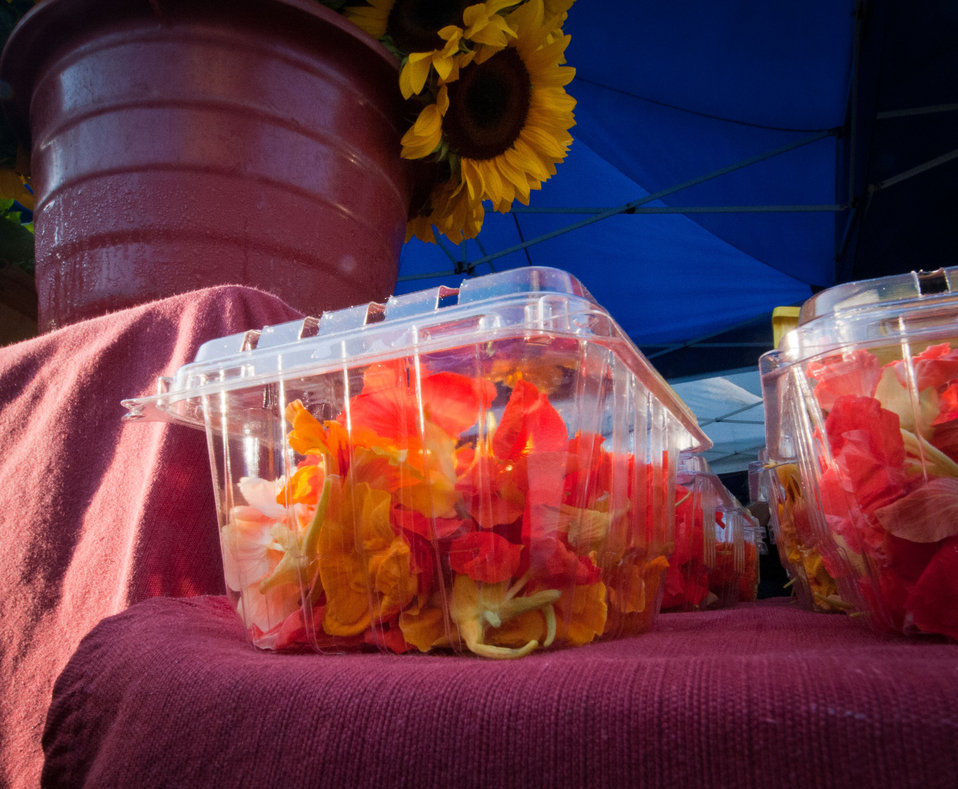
Worden Farm (www.wordenfarm.com) fresh picked organic sunflowers, nasturtium flowers (pepper flavor) and squash flowers (all decorative and edible) are ready for sale at the Saturday Morning Market, in St. Petersburg, FL, on April 14, 2012. Worden Farm is a family farm that provides certified organic produce to Southwest Florida through community supported agriculture (CSA) membership programs and retail sale at several farmer’s (community) markets. Chris Worden, Ph.D. and Eva Worden, Ph.D. founded and operates the farm that employs more than 20 people. Growing certified organic crops in the coastal sandy soil has required them to develop innovative farming techniques which help the farm as well as assist the studies of universities and farm industry. There are several Worden Farm apprenticeships that provide hands-on training in all aspects of the farm, to include direct marketing at the Saturday Morning Market, or other market sites. The farm also holds culinary and gardening workshops, and other interactive educational events. One of their organic certifications is from the U.S. Department of Agriculture (USDA) and they have partnered with the USDA Natural Resources Conservation Service (NRCS) for soil conserving windbreaks and long tunnel structures to nurture seedlings and extend the growing season.